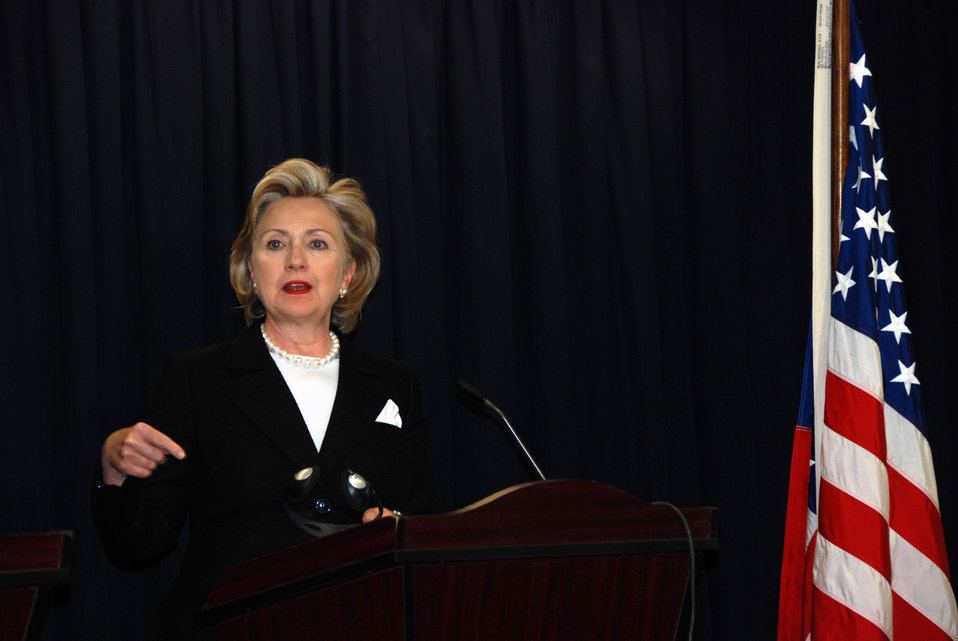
Secretary Clinton and Somali President Press Conference

U.S. Secretary of State Hillary Rodham Clinton participates in a press conference with the Somali President Sheikh Sharif Ahmed in Nairobi, Kenya August 6, 2009.